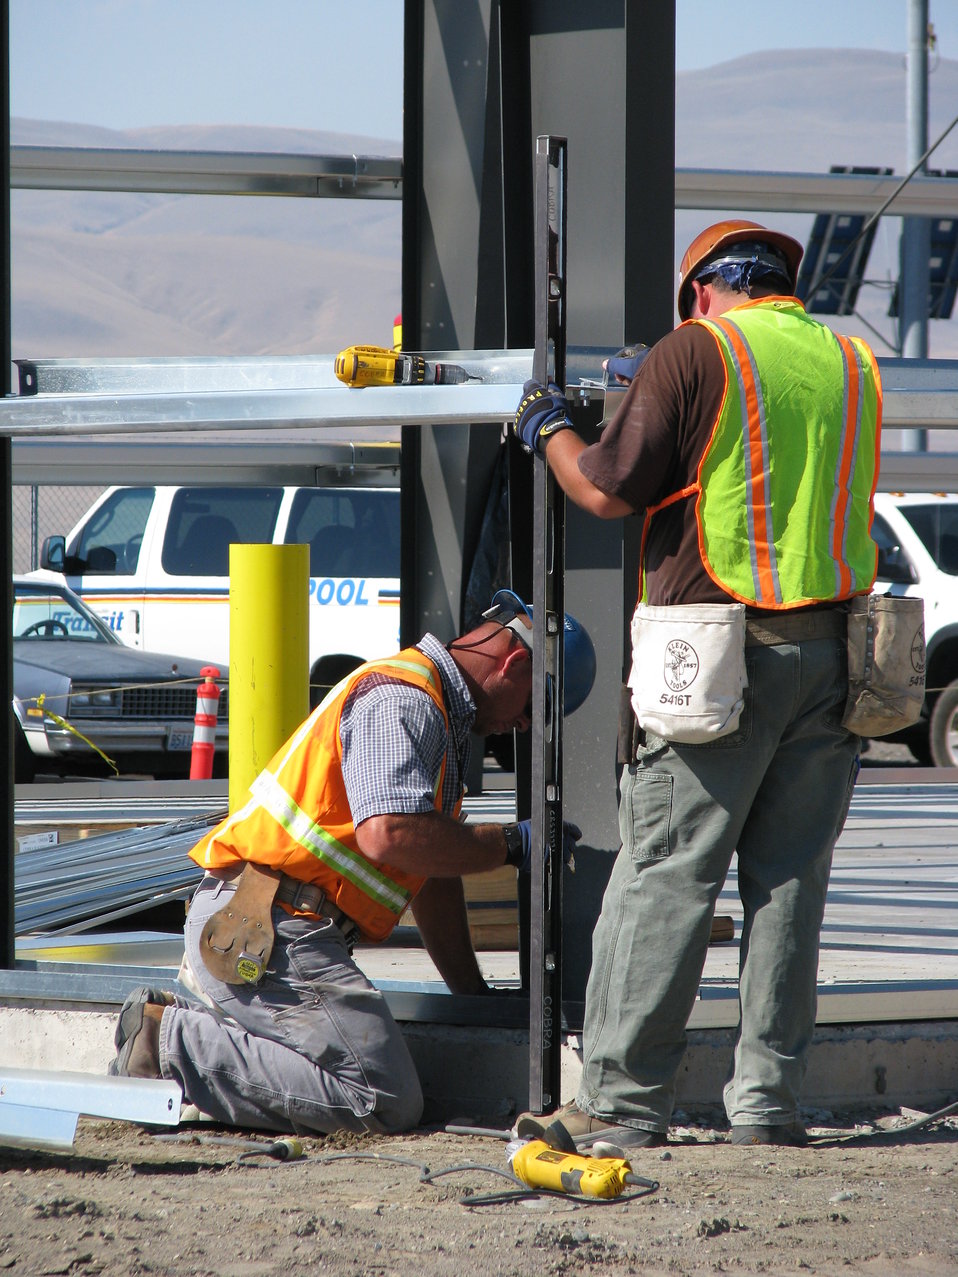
222-S conditioned storage construction